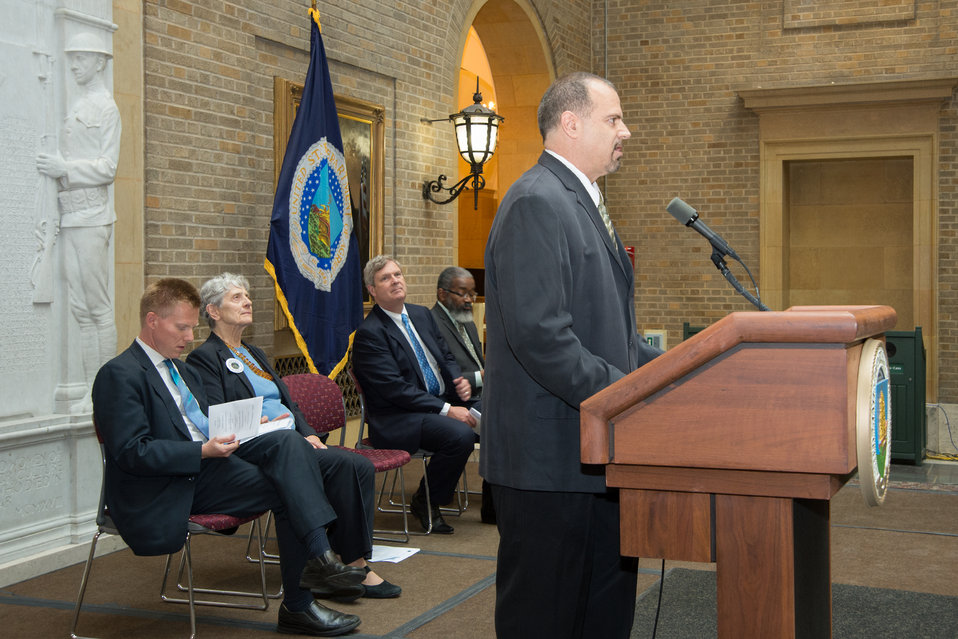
U.S. Department of Agriculture's (USDA) Organization of Professional Employees (OPEDA) President Louis Iacoletti introduces Agriculture Secretary Tom Vilsack at USDA's Unsung Hero Awards at USDA in Washington, D.C. on Wednesday, May 7, 2014. OPEDA in cooperation with USDA Departmental Management (DM) presented the “Unsung Hero Awards” to USDA employees who have demonstrated extraordinary effort in performing tasks, who have unselfishly shared time and expertise, and consistently and willingly extended a helping hand. They were also recognized for their contributions to transforming the culture of USDA.